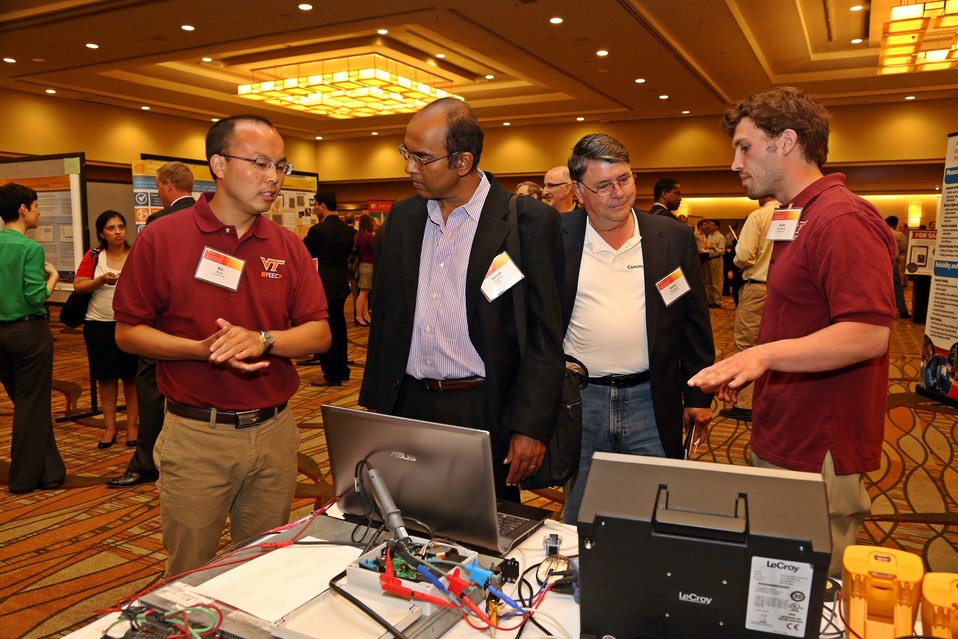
Tech Forum 4

Members of the Virginia Tech team talking to attendees at their booth.